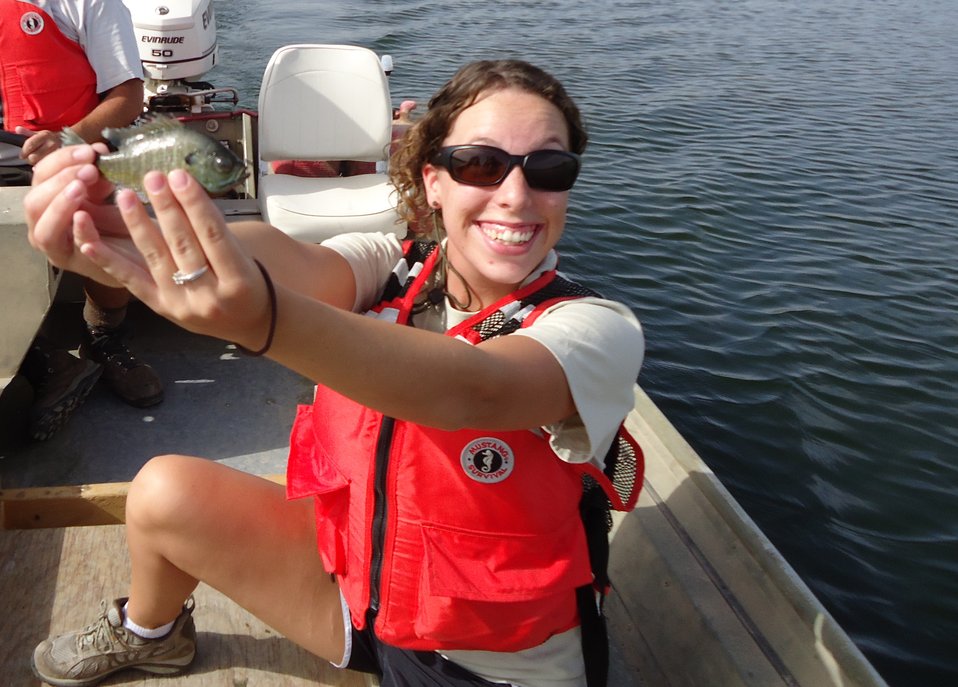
Molly McCarter

FWS Wilderness Fellow Molly McCarter helps remove invasive fish at Imperial National Wildlife Refuge in Arizona.